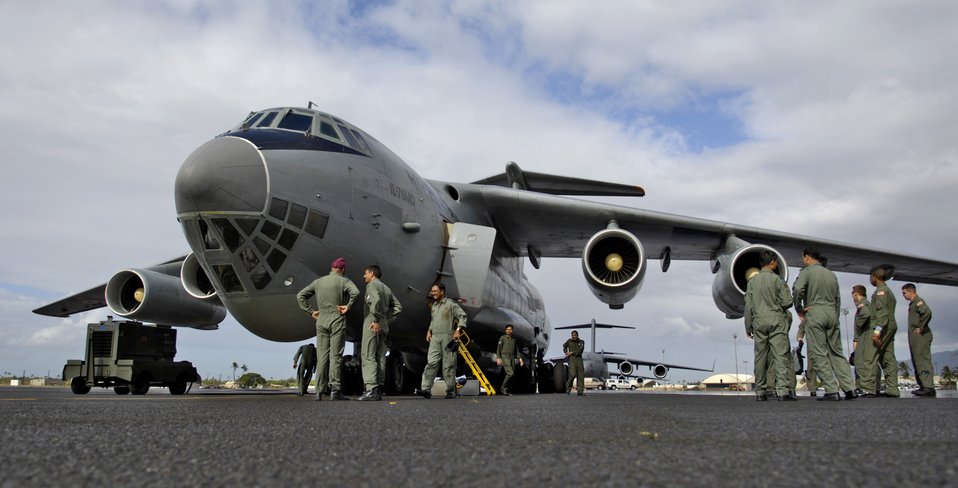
Airmen fly with Indian air force counterparts

Airmen from the 15th Airlift Wing wait to board an Indian IL-76 medium cargo aircraft for a training mission with an Indian aircrew visiting Hickam Air Force Base, Hawaii, Sept. 20.